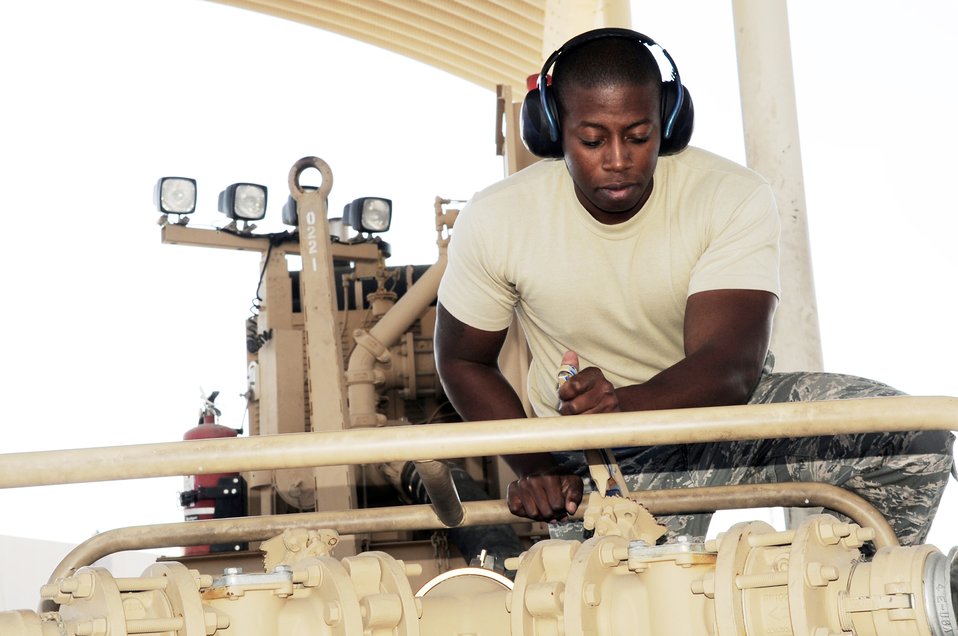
Airmen making a difference one gallon at a time

Senior Airman Brandon Bailey adjusts an R-18 fuel pump during operations at the fuel off-load facility at a base in Southwest Asia Jan. 6, 2010. On any given day, Airman Bailey and other fuels Airmen in his flight can off-load up to 600,000 gallons of fuel from the host nation supplier fuel trucks. Airman Bailey is a fuels distribution journeyman with the 380th Expeditionary Logistics Readiness Squadron fuels management flight.